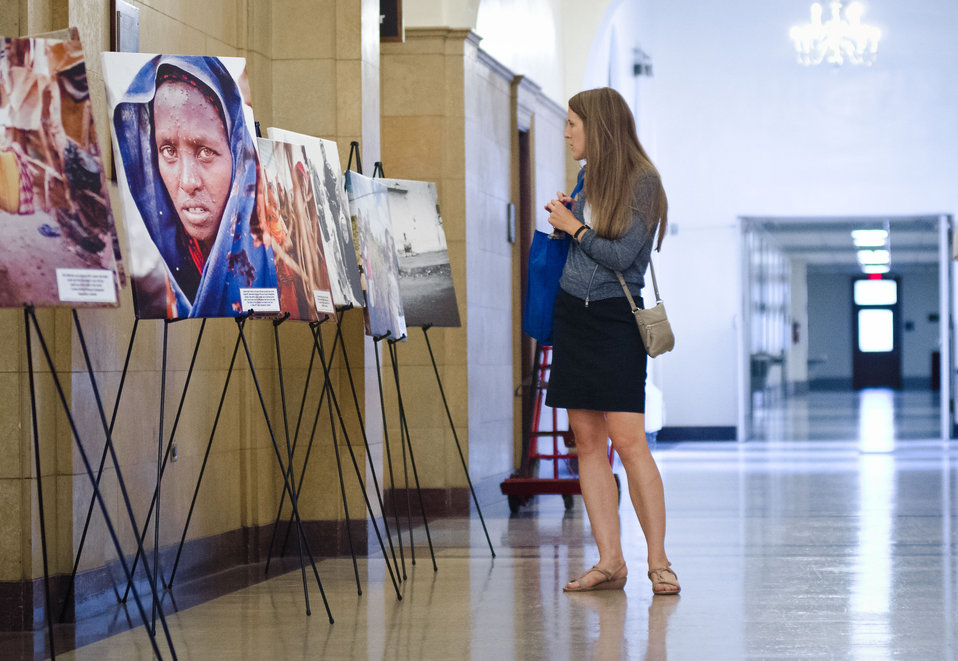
A guest takes time to study Ridwan Adhami's photography exhibit at the Iftar celebration, co-sponsored by the U.S. Department of Agriculture, U.S. Agency for International Development (USAID) and Islamic Relief USA, on Tuesday, August 7, 2012, in the USDA Whitten Building, in Washington, D.C. Ramadan is the month of fasting, intensive prayer, sacrifice and worship for Muslims around the world. Throughout this month, Muslims fast during the day, abstaining from consuming food from dawn to dusk and using this time to purify spiritually. Fasting reminds Muslims of the poverty and hunger suffered by many in the United States and worldwide. It is a connection with those who are hungry not through devotion, but through the many global factors that lead to hunger and famine. Iftar is the meal at which Muslims break their fast at sunset, usually by eating dates, according to the Prophetic tradition.